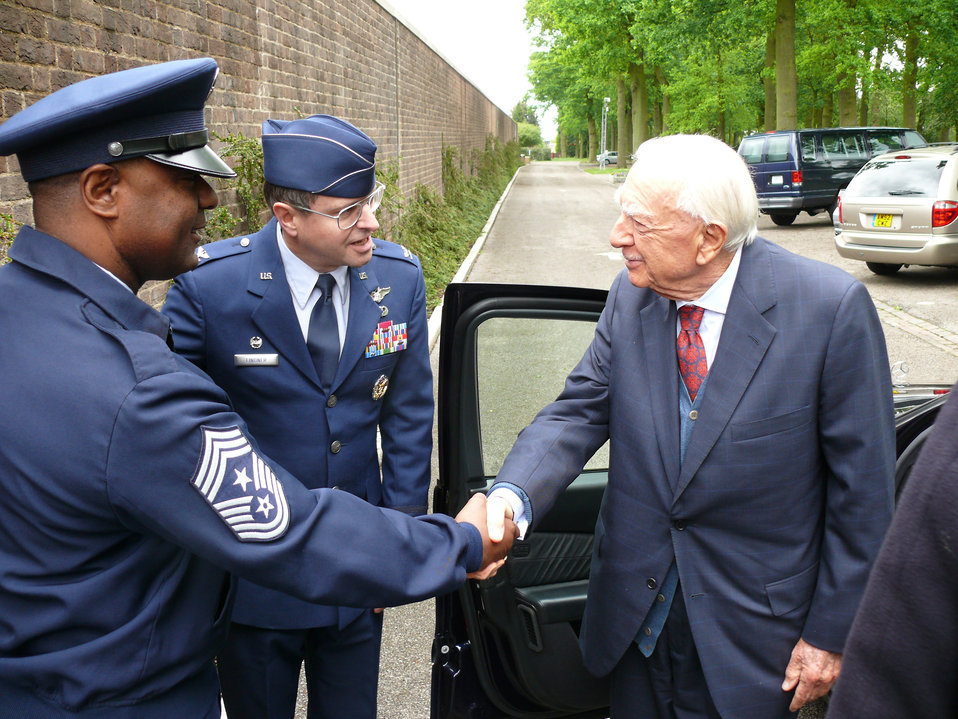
A place for remembrance

Chief Master Sgt. Robert Dandridge shakes hands with Walter Cronkite May 23 at the Cambridge American Cemetery in the United Kingdom as Col. Blake Lindner looks on. Mr. Cronkite came to the cemetery to tape a piece for an upcoming PBS special, which covers his time in the U.K. during the war. Chief Dandridge is the command chief and Colonel Lindner is the commander of the 501st Combat Support Wing.